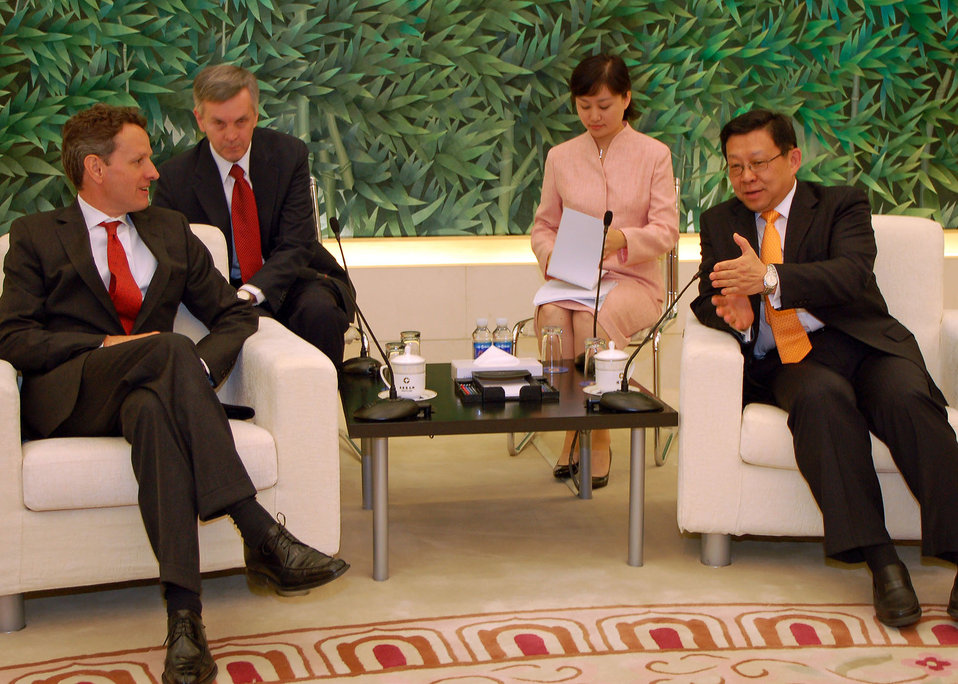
China trip: May 31-July 2 2009

Secretary Geithner meeting with Minister of Commerce Chen Deming at the Ministry of Commerce in Beijing, China during his first trip as Treasury Secretary May 31-June 2, 2009.